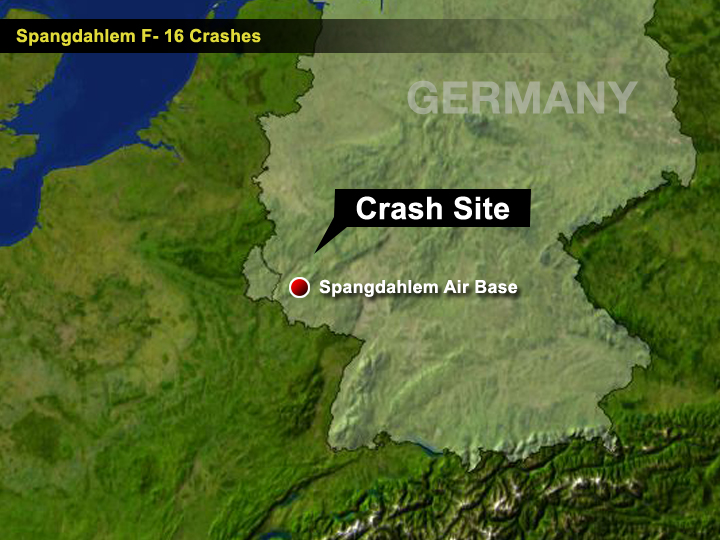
Map